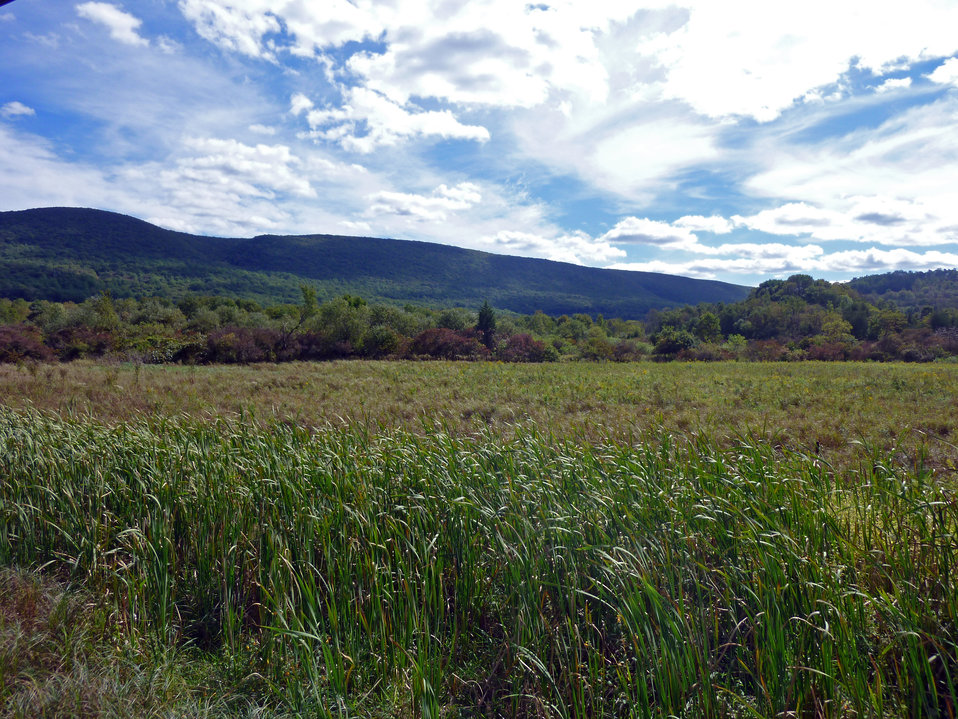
Cherry Valley National Wildlife Refuge